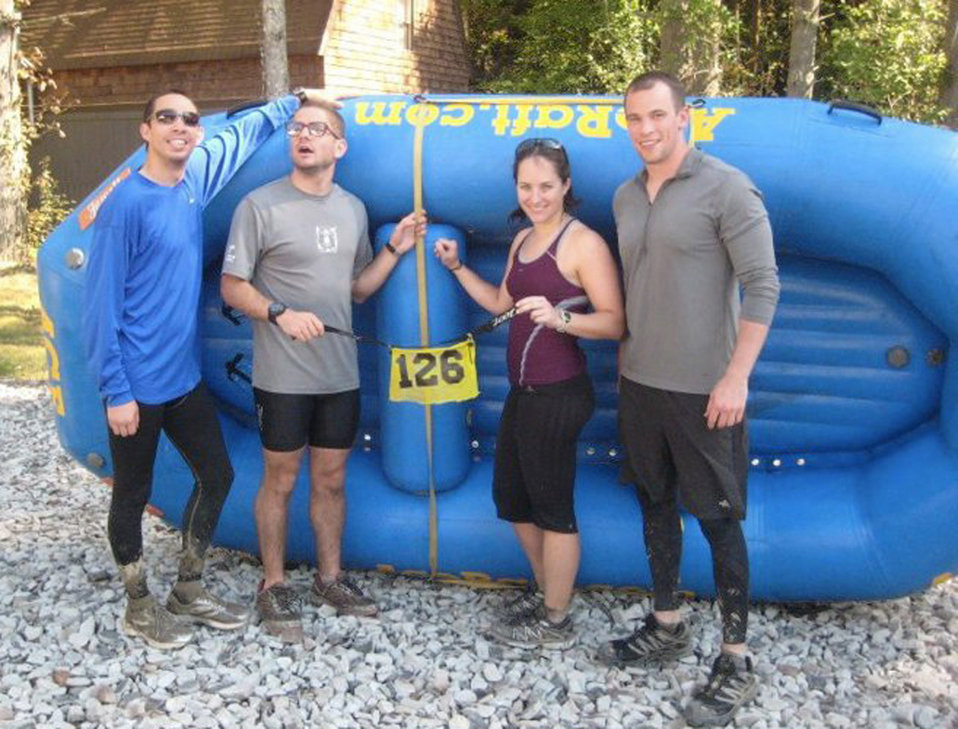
Team Schriever adventure race

Members of the Schriever Air Force Base Wilderness Challenge adventure race team pose in front of their raft. The Schriever team claimed the Air Force first place title and sixth place overall after completing the 52-mile course in 8:29.